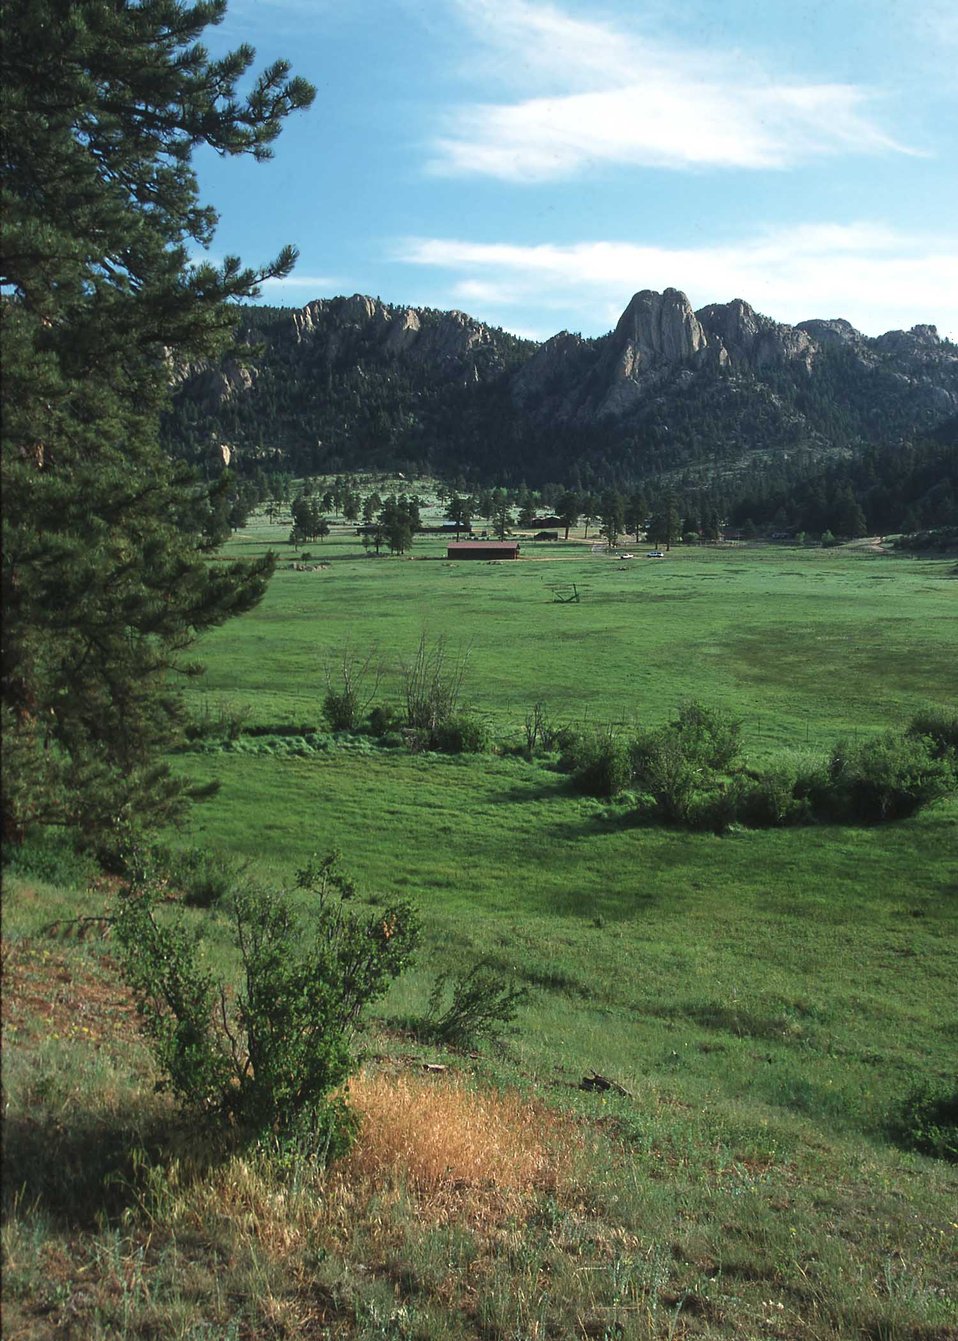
Twin Owls Rock , RMNP.